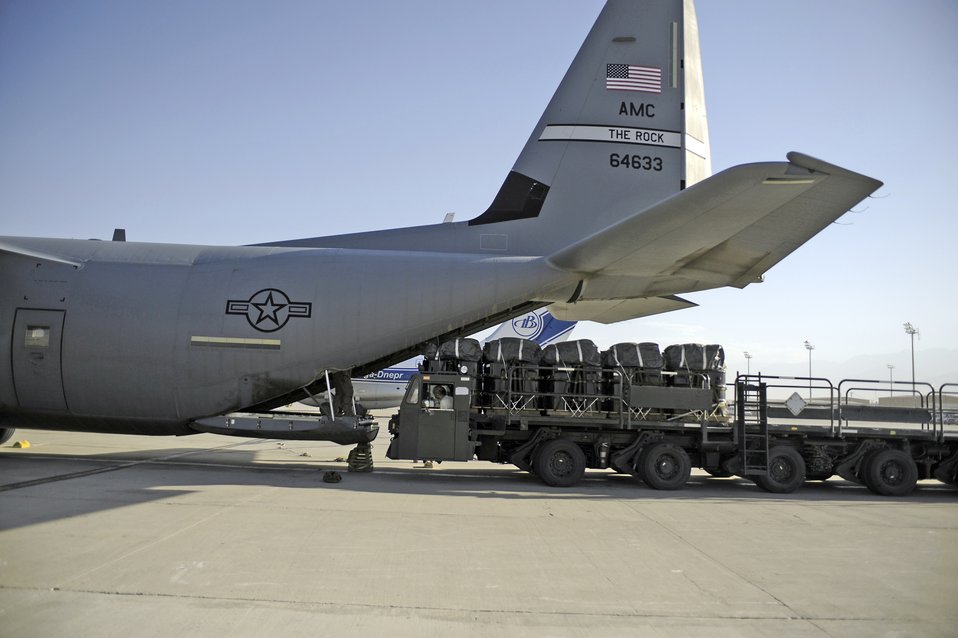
Pallets of JP-8 fuel rigged for an airdrop are loaded into the cargo bay of a C-130J Super Hercules July 17, at Kandahar Air Field, Afghanistan.

Pallets of JP-8 fuel rigged for an airdrop are loaded into the cargo bay of a C-130J Super Hercules July 17, Kandahar Air Field, Afghanistan. The 772nd Expeditionary Airlift Squadron perform airdrops like this to provide much needed supplies to troops on the ground.